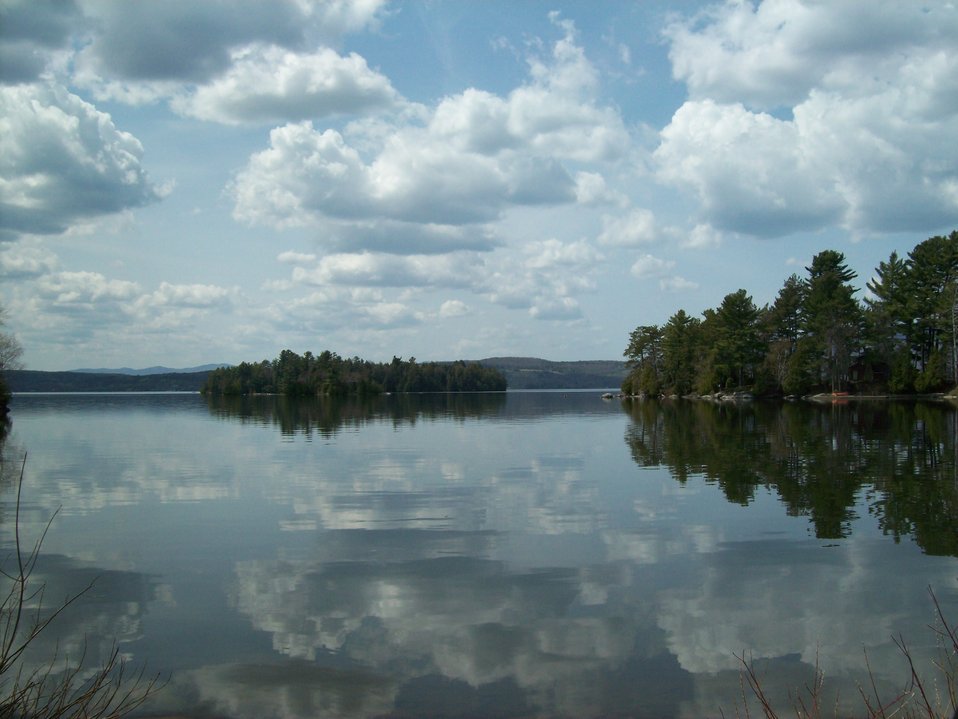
Photo of the Week - Eagle Point Wildlife Management Area, Vermont

Photo of the Week - 12/10/10

View of Lake Mephremagog from the Service's newly acquired Eagle Point Wildlife Management Area in northern Vermont.